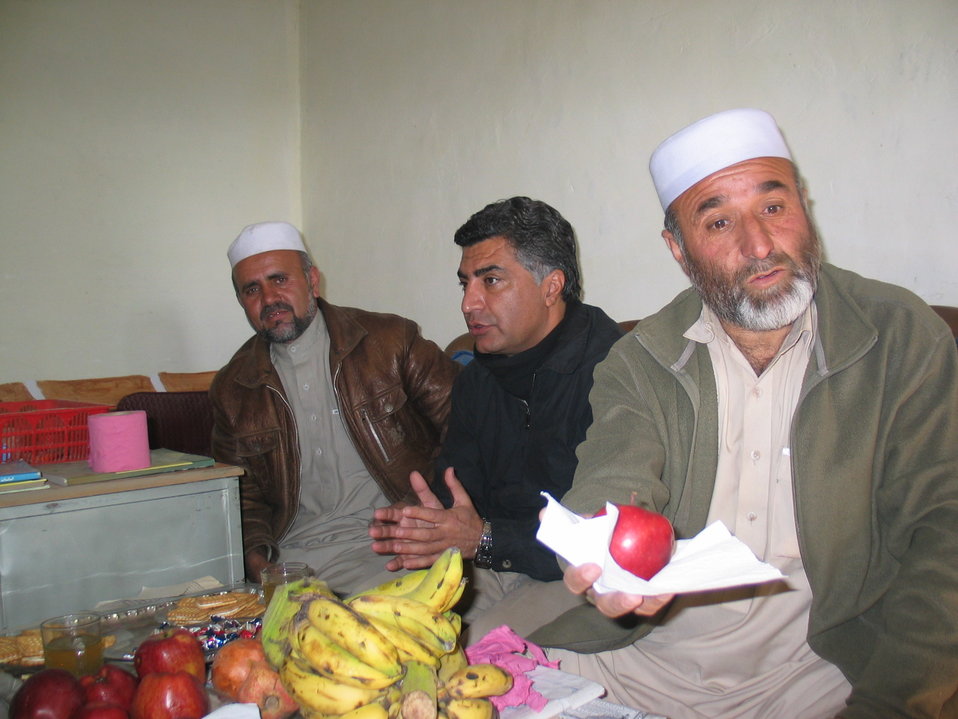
Kabul River Bridge Renovation, December 3, 2010